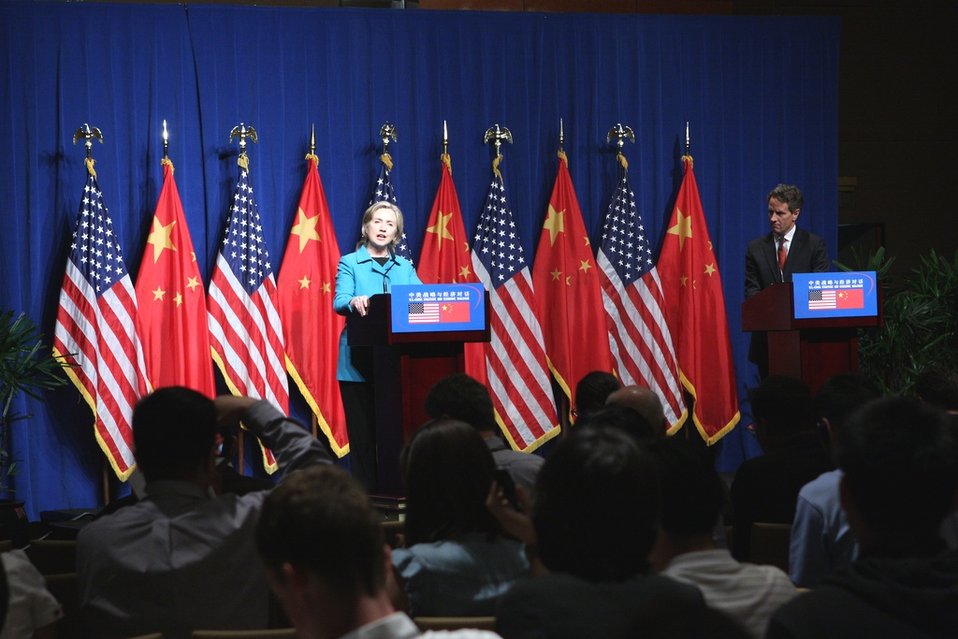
Secretary Clinton Delivers Remarks at Joint Press Availability

U.S. Secretary of State Hillary Rodham Clinton and U.S. Secretary of the Treasury Timothy F. Geithner hold a joint press availability, in Beijing, China, following the conclusion of the U.S.-China Strategic and Economic Dialogue on May 25, 2010.